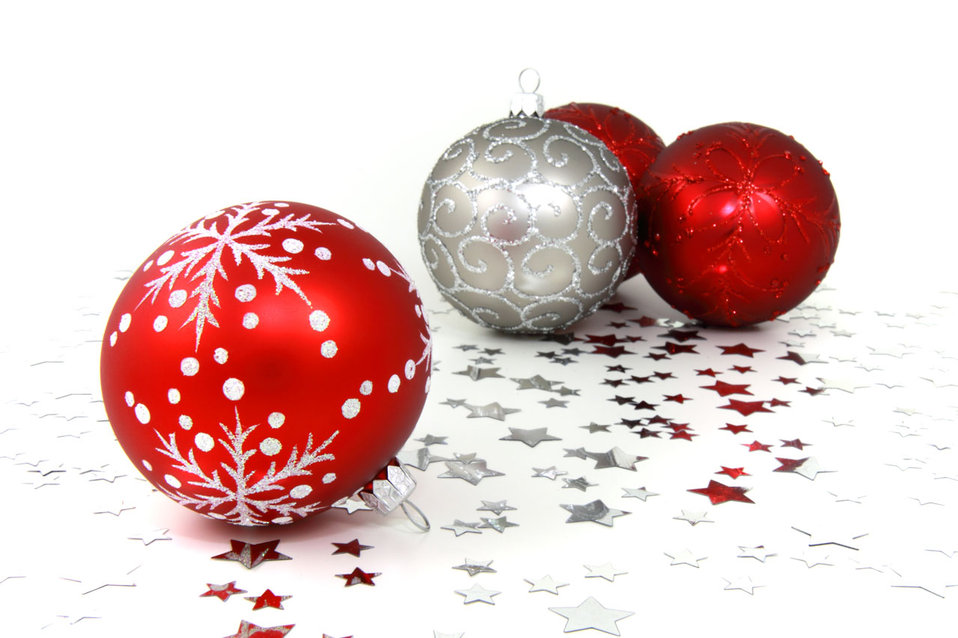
Christmas baubles

Four red and silver christmas baubles with silver stars on white background.